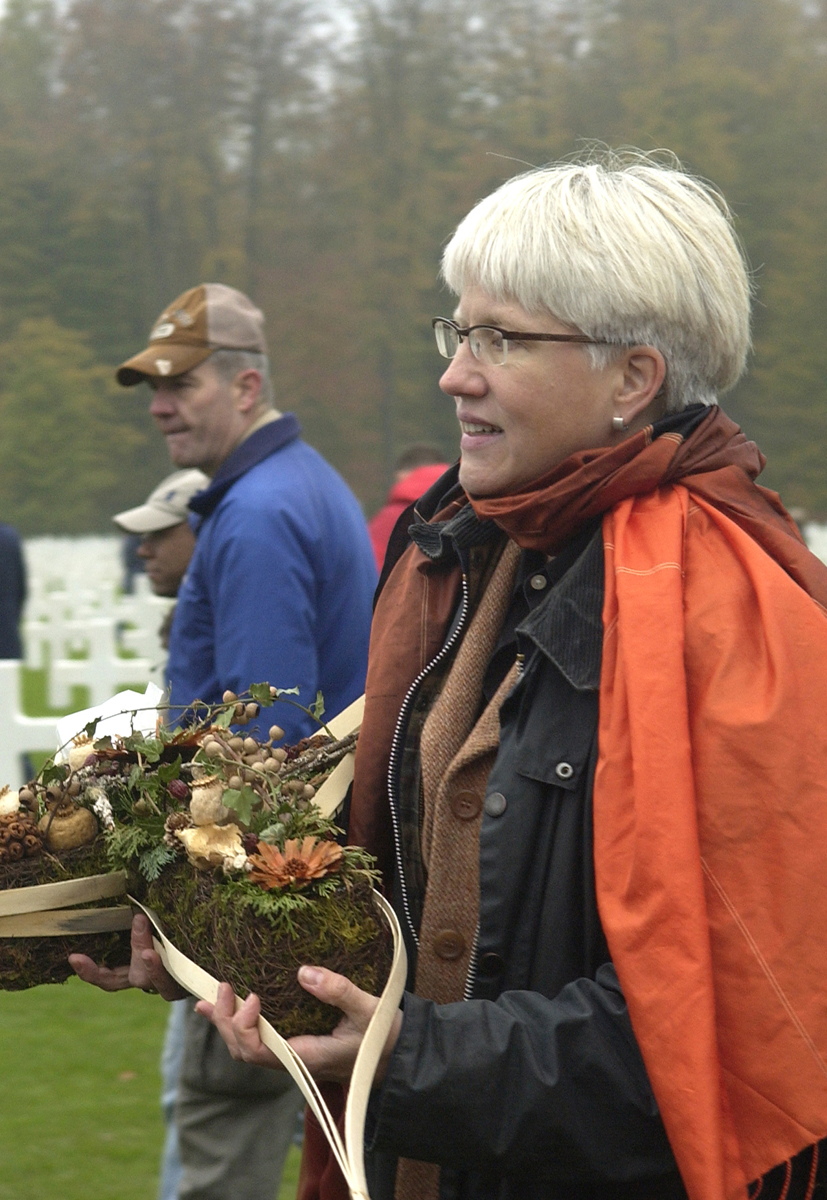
Spangdahlem Airmen honor Veterans

Helen Patton Plusczyk, the granddaughter of the late Gen. George S. Patton, prepares to decorate his cross at the Luxembourg American Cemetery and Memorial after a Veterans Day ceremony Nov. 11 in honor of those who fell while serving General Patton and liberating Luxembourg.